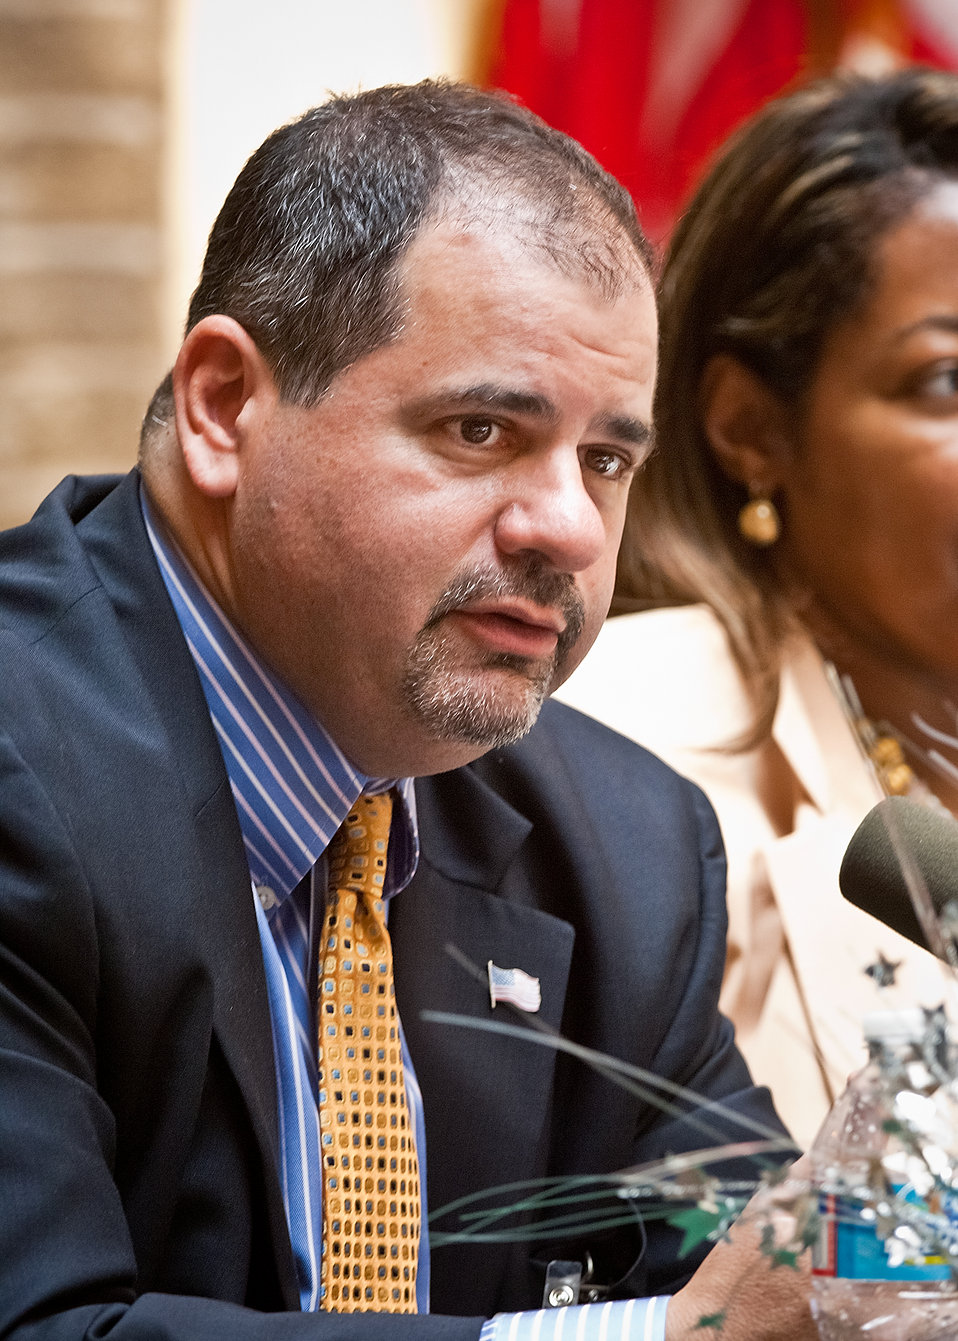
Josh Sawislak, Senior Fellow Telework Exchange listens to employee questions during a “Telework Program Party/Brown Bag” event on the patio of the Jamie Whitten Building of United States Department of Agriculture, in Washington, DCm on Tuesday, June 7, 2011. The event included an interactive telework panel and exhibits from the field of telework, telecommuting and mobile work environments. The event was open to all USDA employees, supervisors, managers, human resources staff and USDA telework program coordinators.